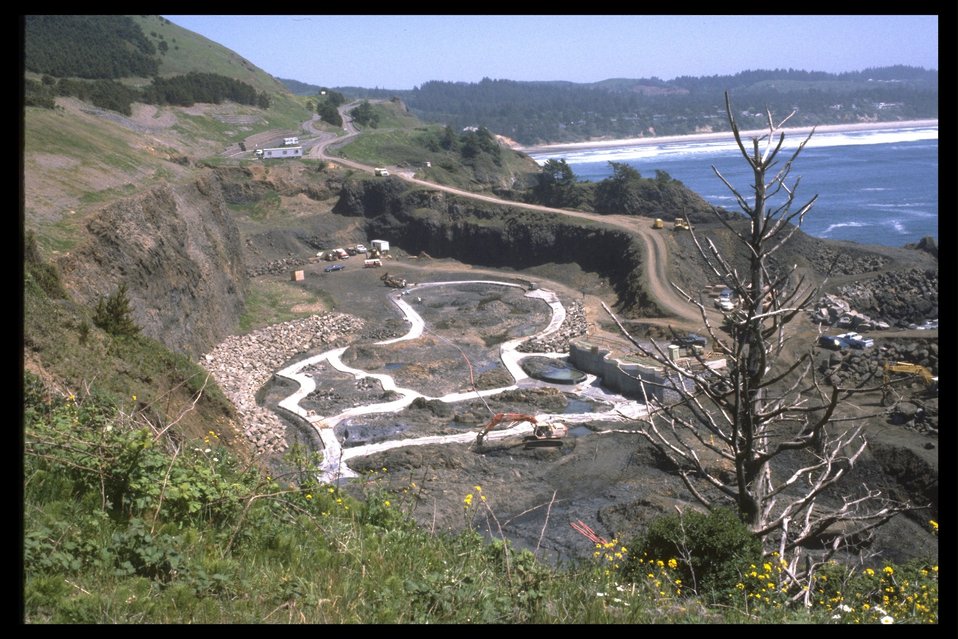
Construction of Quarry Cove tidepools.